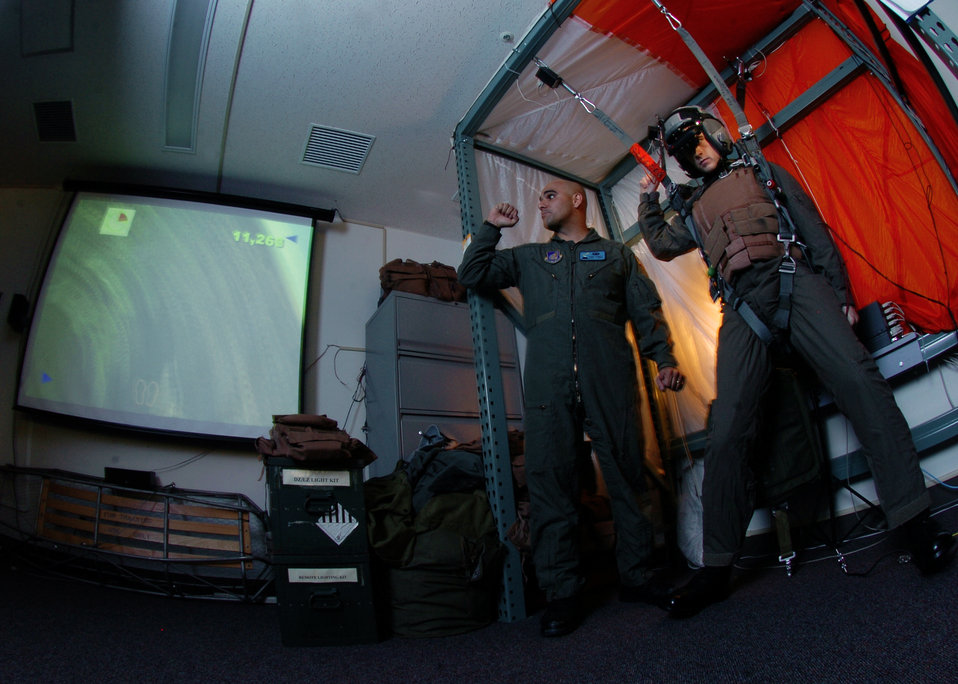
Sim-ply hang on

YOKOTA AIR BASE, Japan -- Staff Sgt. Dave Jewell (left) demonstrates the features of a virtual reality parachute simulator to Senior Airman Joshua Woods during training. Sergeant Jewell teaches high-threat combat survival, water survival and evasion techniques to hundreds of assigned and in-transit aircrew members and other Department of Defense people here. The Airmen are assigned to the 374th Operations Support Squadron.